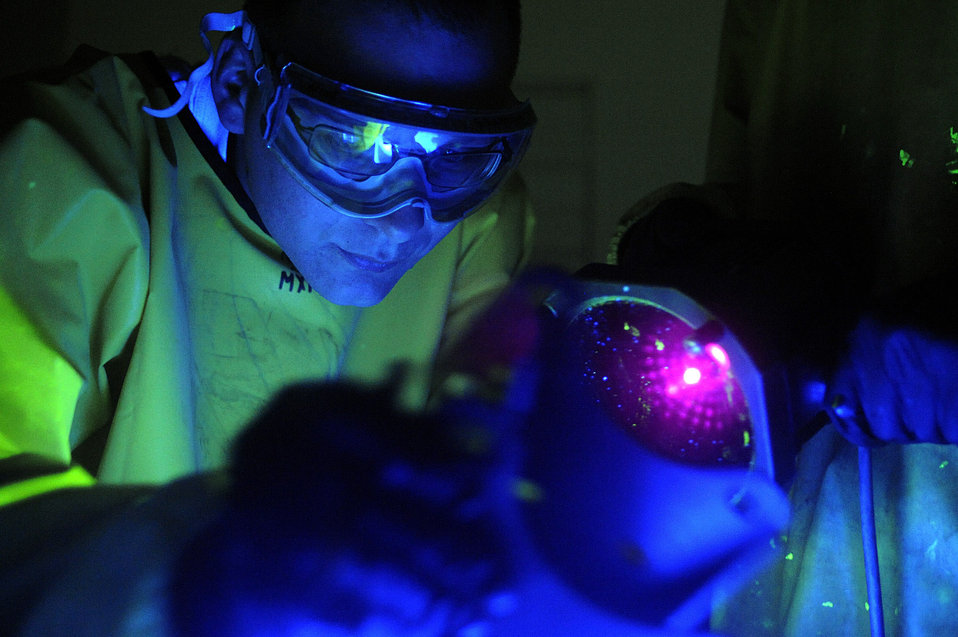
Shine on!

Staff Sgt. Ehud Torres inspects a support bracket under ultraviolet light May 20, 2010, while looking for cracks and other flaws. Sergeant Torres is a non-destructive inspection technician with the 28th Maintenance Squadron at Ellsworth Air Force Base, S.D.